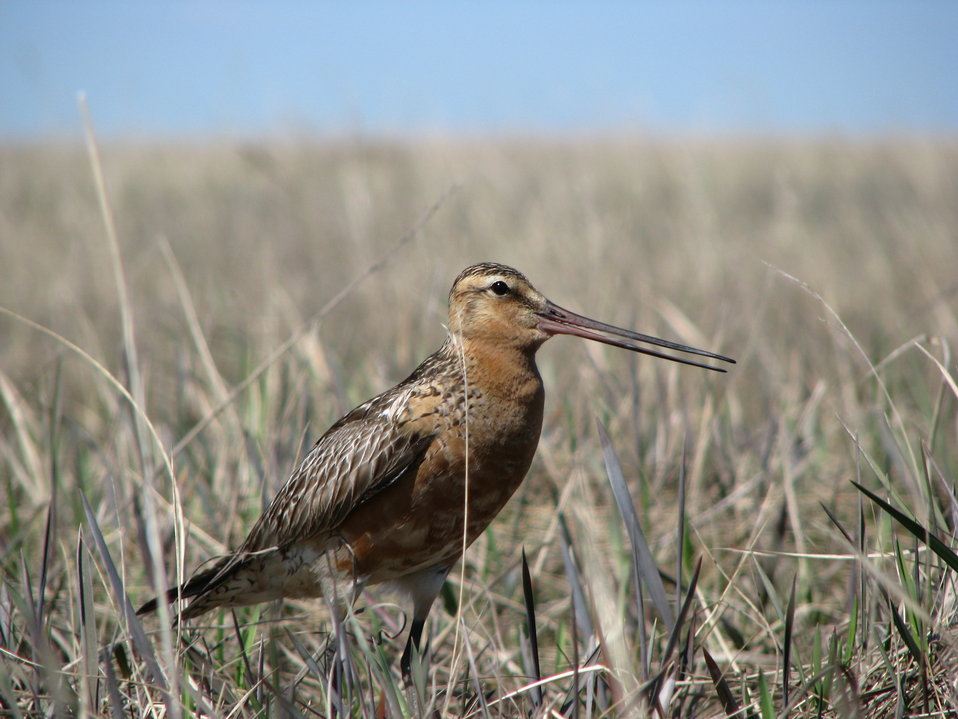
Male Godwit strutting his stuff

USFWS Yukon Delta NWR